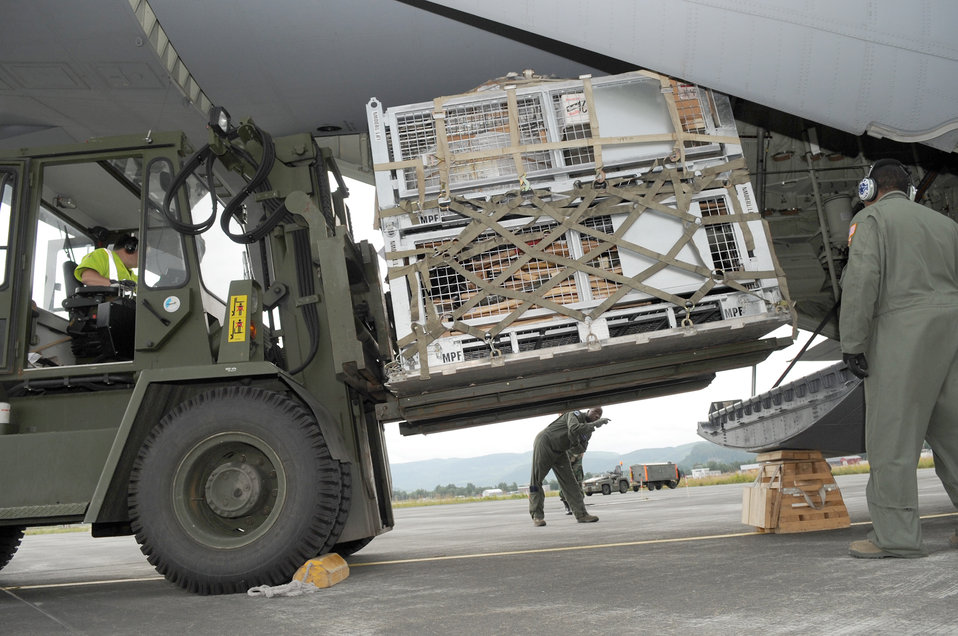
Ramstein Airmen, C-130s deliver supplies to Russia

Military members load firefighting and humanitarian supplies on to a C-130J Super Hercules Aug. 14, 2010, at Trondheim Airport, Norway. The supplies are being delivered to Moscow after an official request from the Russian government to the U.S. and at the request of the Department of State, the Department of Defense directed U.S. European Command officials to provide valuable firefighting equipment that includes; firefighting protective equipment and tools to help Russia combat the ongoing wildfires. The military members are assigned to EUCOM, U.S. Air Forces in Europe, 37th Airlift Squadron and Norwegian flightline workers.